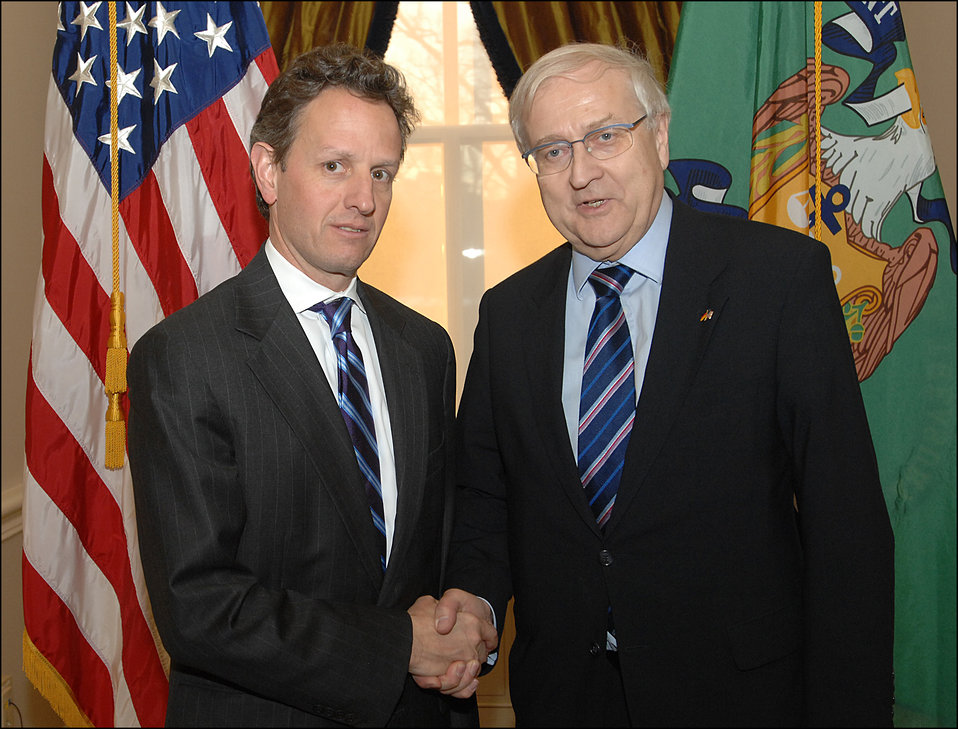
German Federal Minister for Economics and Technology Rainer Brüderle

On February 1, 2010, Secretary Geithner met with German Federal Minister for Economics and Technology Rainer Brüderle at Treasury.